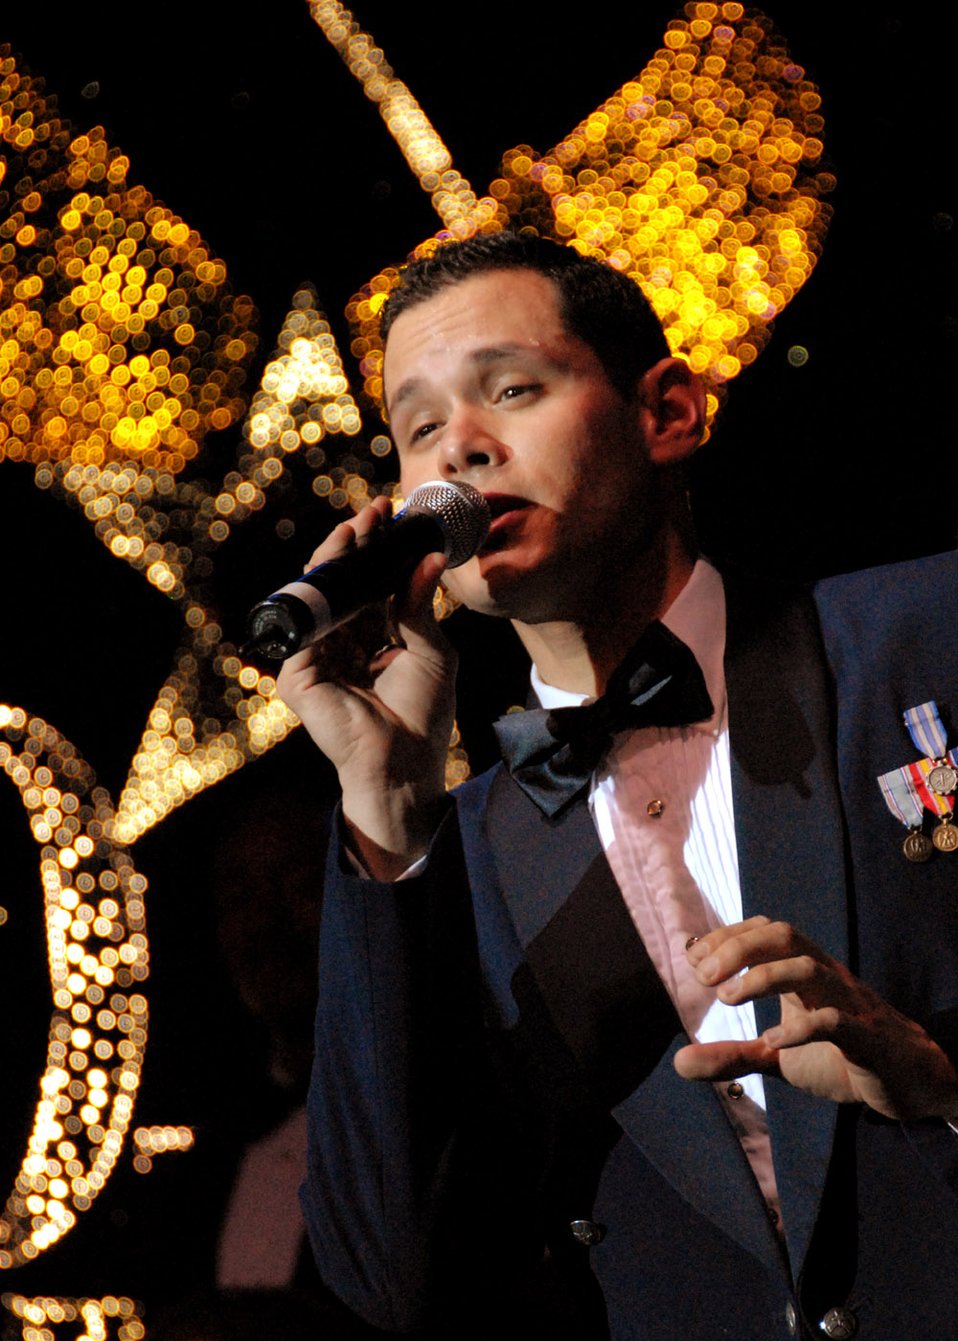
Tops In Blue performs at Osan

Staff Sgt. Daniel Rutherford performs during Tops In Blue's annual world tour celebrating